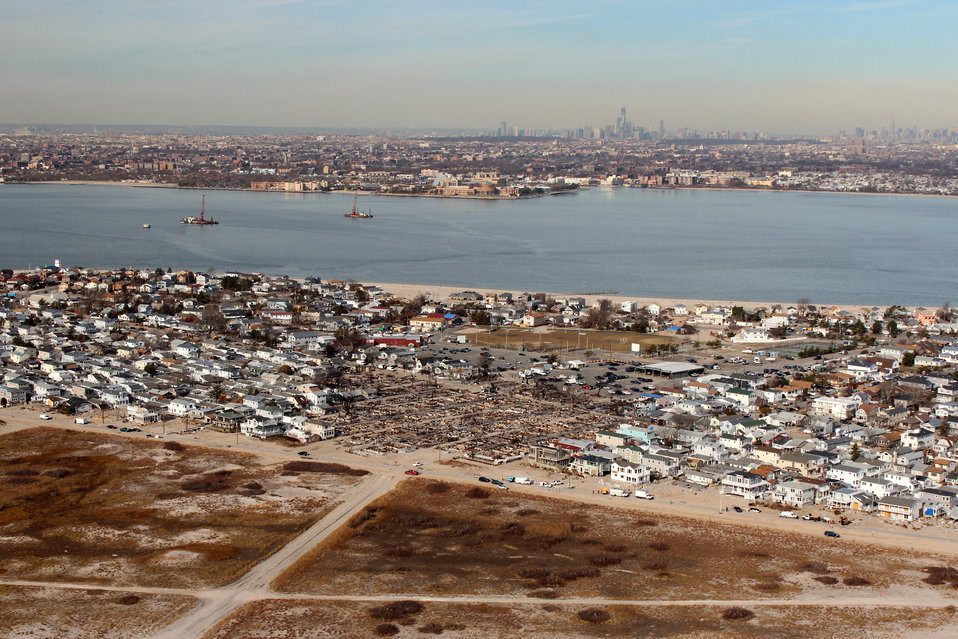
December 6, 2012 Flyover view of Breezy Point, New York

During the Hurricane Sandy response, EPA supported FEMA by taking to the air to determine where additional recovery support was needed. Many areas, including wetlands and the barrier islands were inaccessible by car and flyovers provided greater insight to response needs.